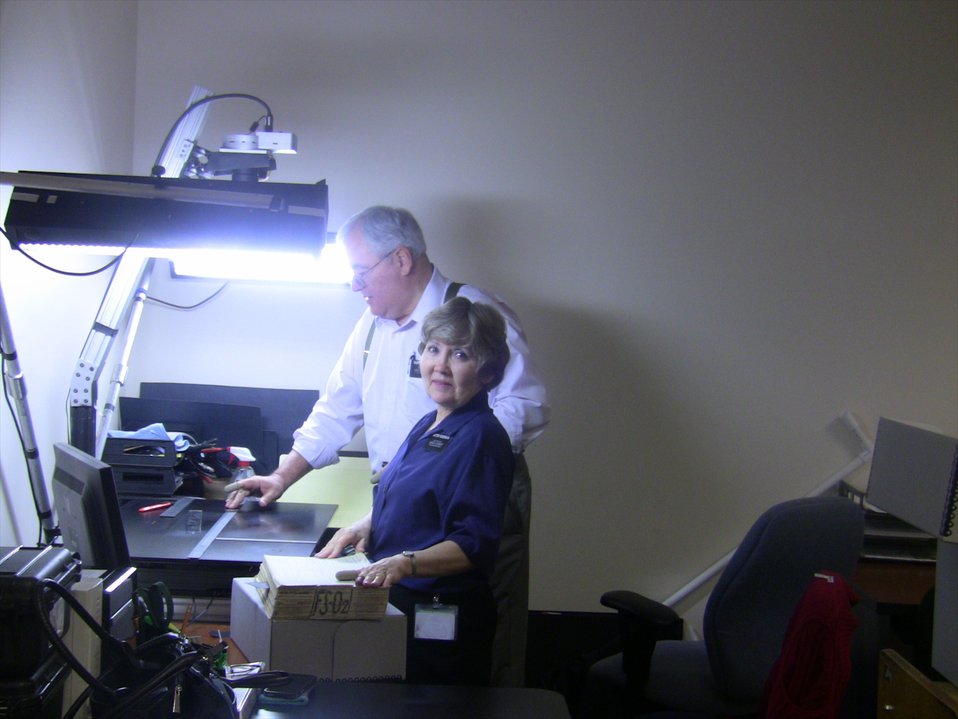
Family Search Volunteers Lee and Margo Rosenman digitizing RG 49 holdings; Location: National Archives at Denver, Broomfield, CO